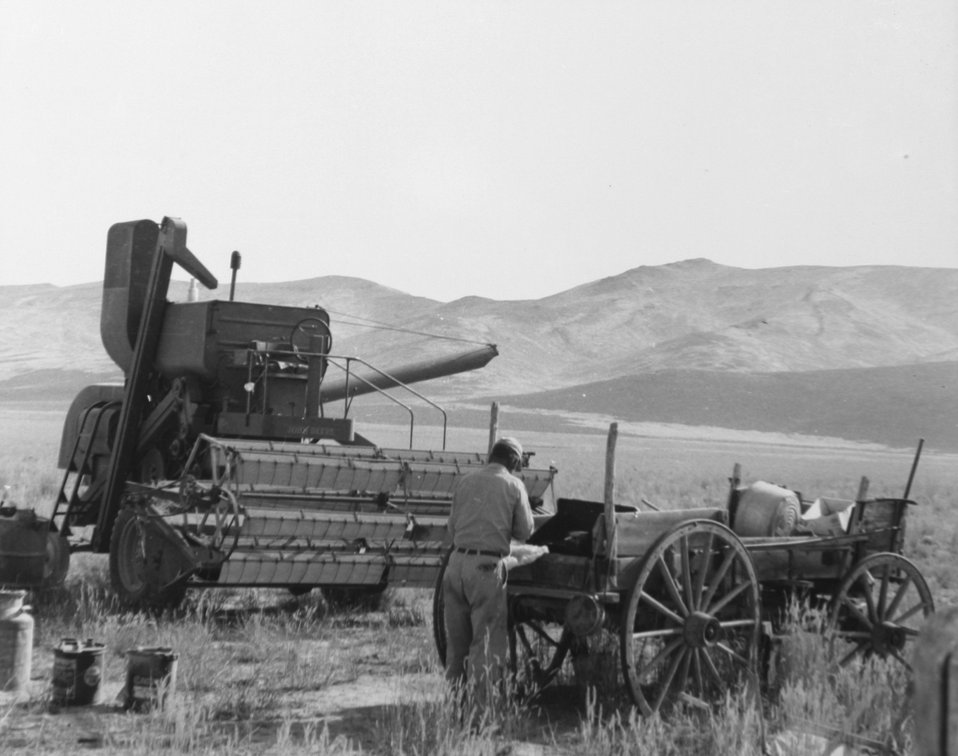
Harvesting crested wehatgrass seed at the Rincon Seeding near Fields, Oregon. August 1956